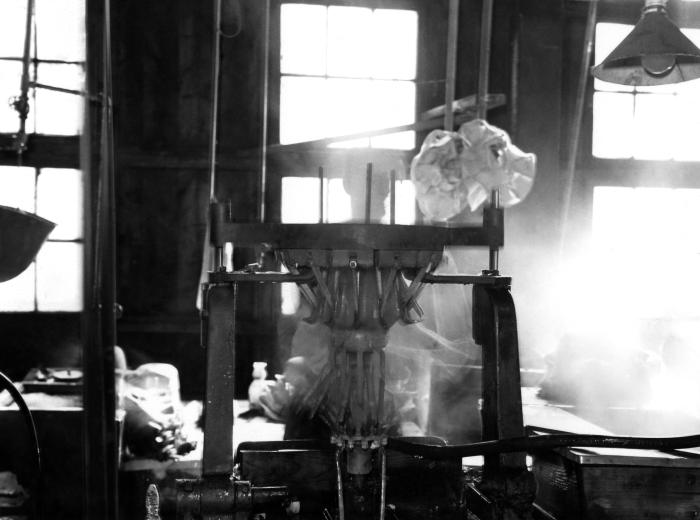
This historical image was provided by the Center for Disease Control's (CDC), National Institute for Occupational Safety and Health (NIOSH). The photograph, shot inside a Connecticut fur processing plant, depicted a hatters' industry worker performing an unidentified task involved in the processing of animal furs, which would be converted into hatters' materiel. Working with 'carroted' fur, fixed with mercury nitrate, workers could be exposed to airborne mercury, especially when using steam, as was shown here, thereby, suffering the detrimental neurologic consequences from its inhalation. Using steam facilitated the airborne dissemination of this neurotoxic element.